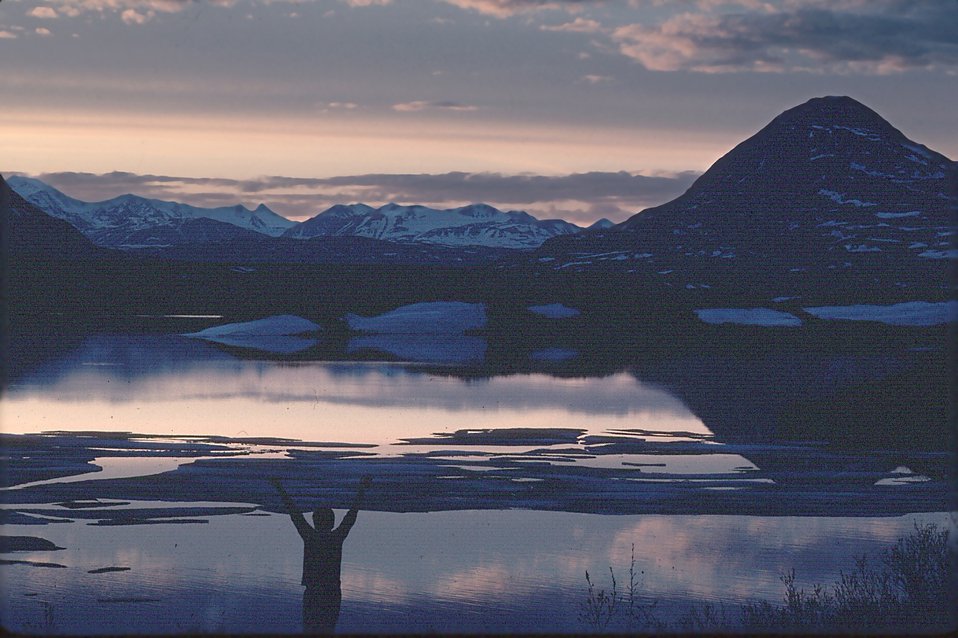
Sunset at Tangle Lakes, Denali Highway, Alaska